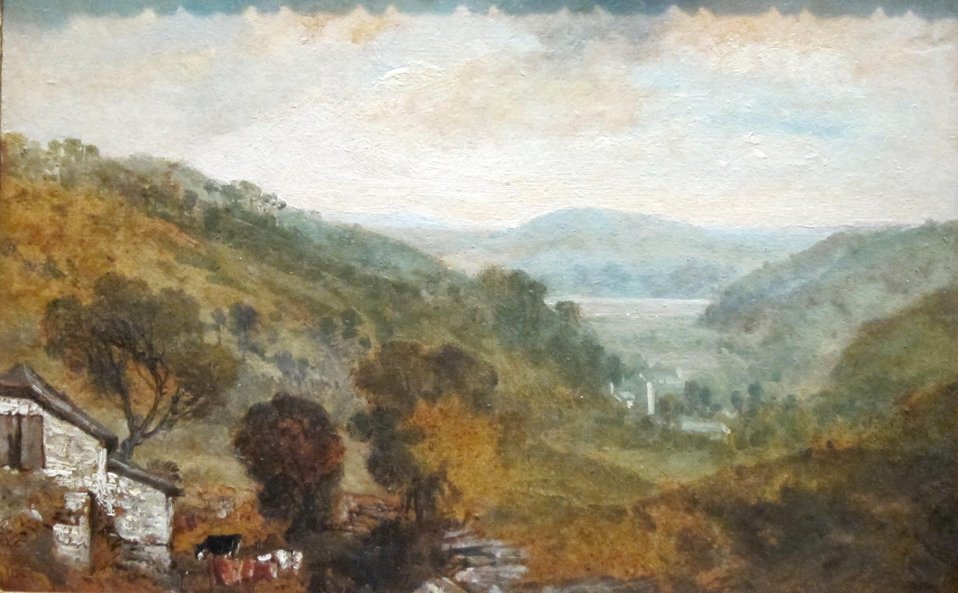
'View in Devonshire' by Joseph Mallord William Turner, Dayton Art Institute